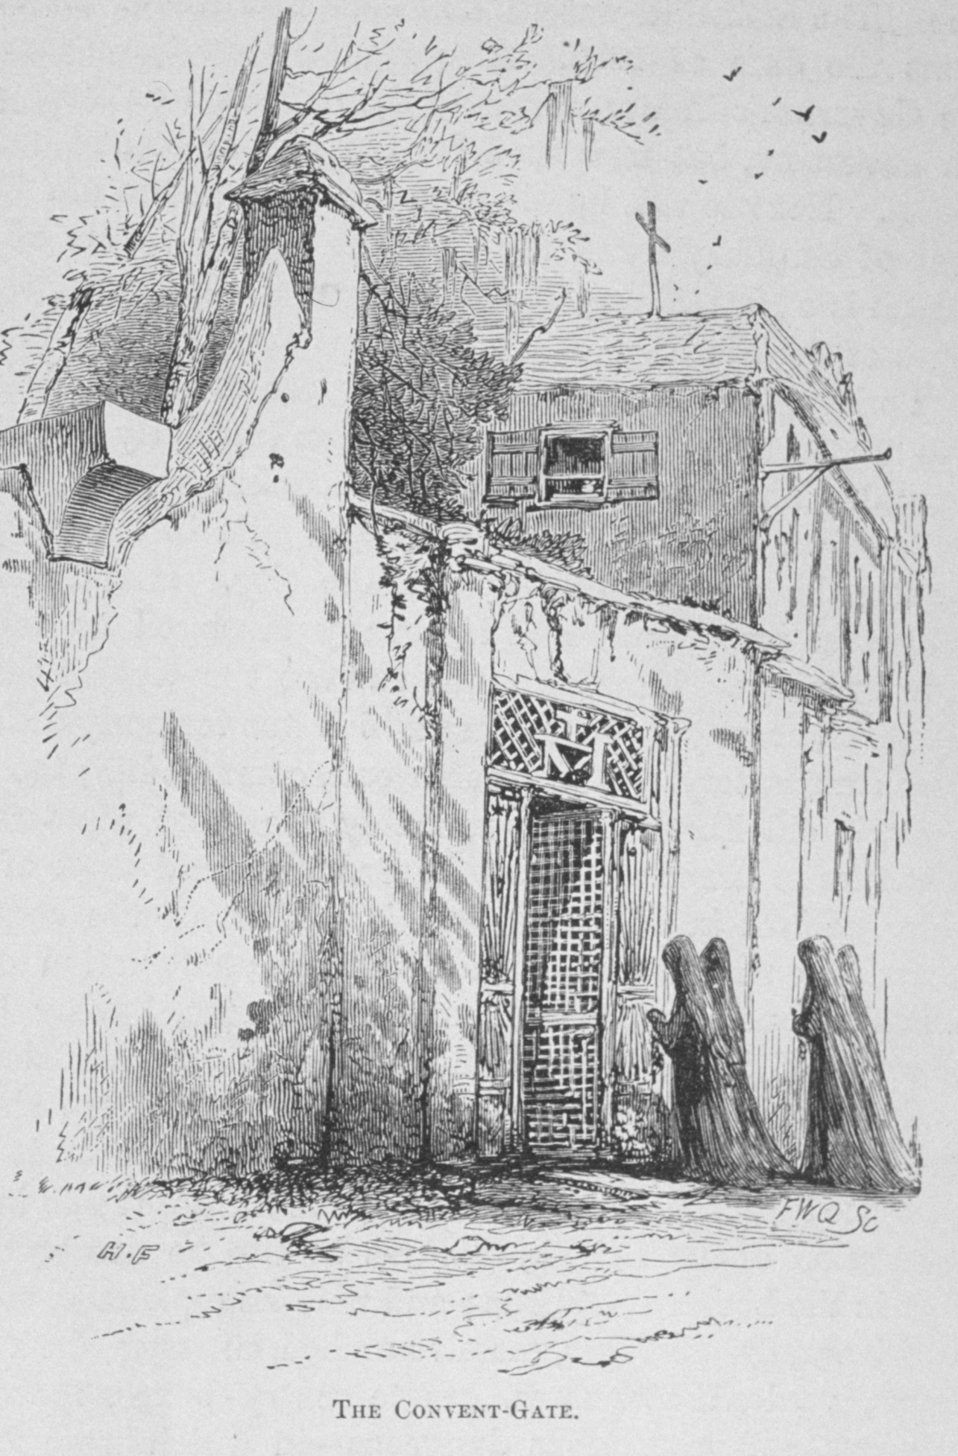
The Convent Gate - in 'Florida for Tourists, Invalids, and Settlers' by George M. Barbour, 1881. Library Call No. F316 .B23 1881. At St. Augustine.